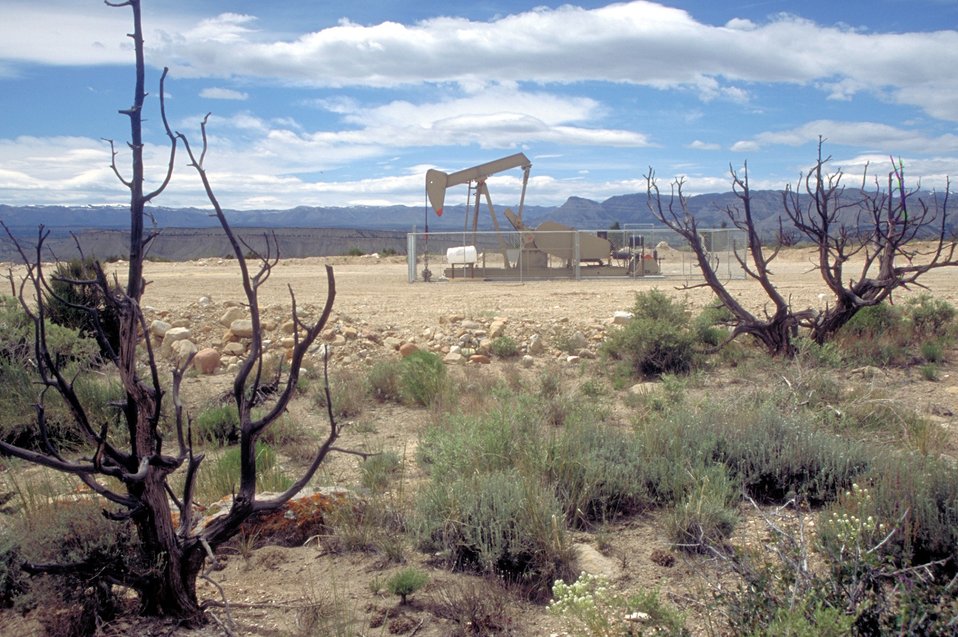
Pump unit producing coal bed methane near Price, Utah.